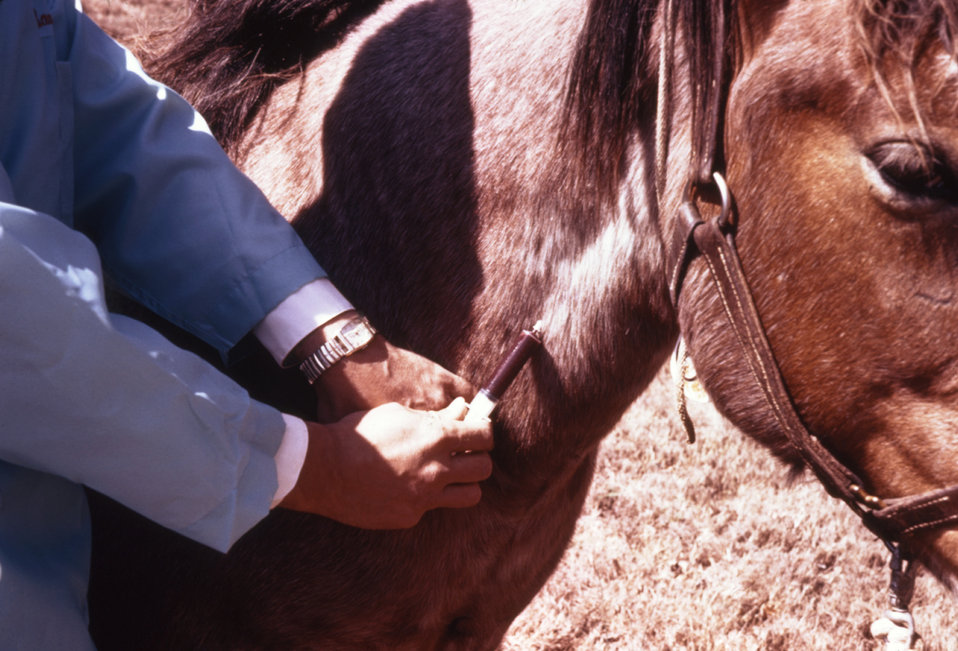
This clinician is bleeding a horse's jugular vein to test it for the arboviral disease, Venezuelan equine encephalitis (VEE).